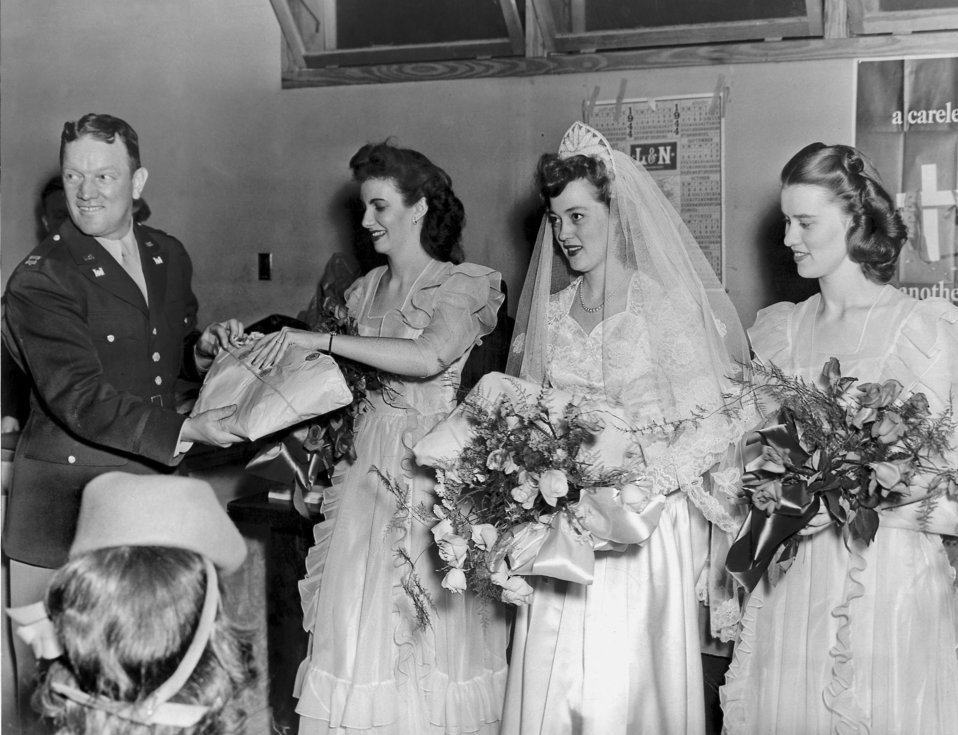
Wedding in Oak Ridge

1038-5 DOE photo by Ed Westcott